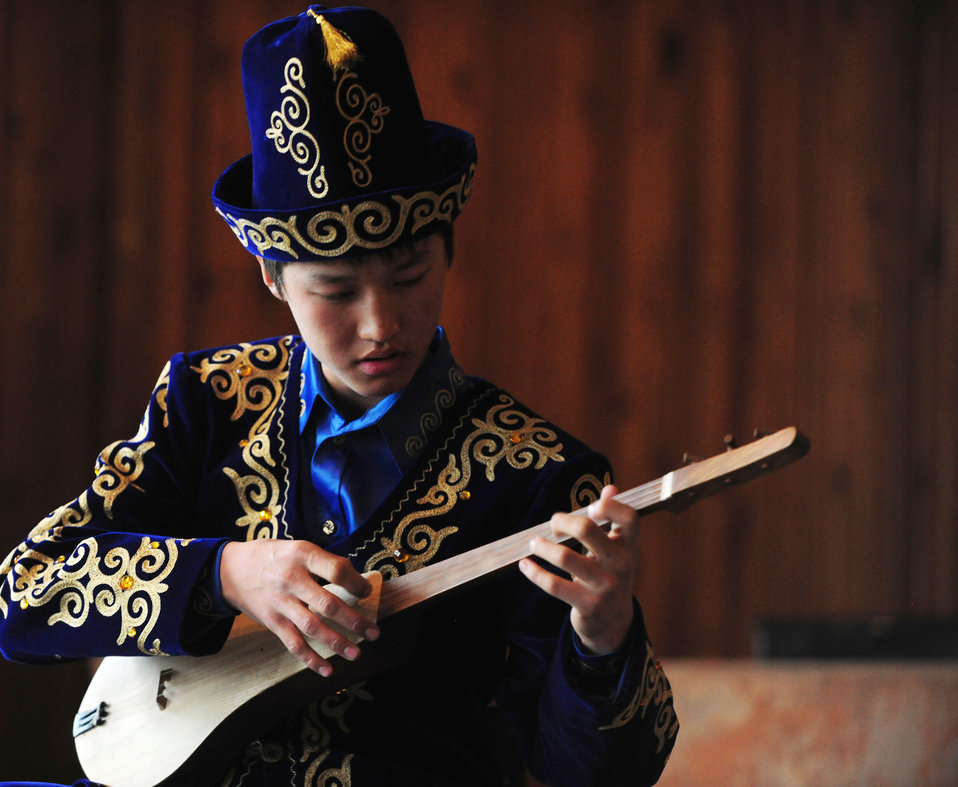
Cheers to Bishkek

Kyrgyz students play the Komuz, a local traditional instrument, for the Washington Redskins Cheerleaders Jan. 27, 2010, at the Abdraev Musical Boarding School in Bishkek, Kyrgyzstan. The Transit Center at Manas in Kyrgyzstan is their first stop in a two-week long tour where they will perform for Airmen, Soldiers, Sailors and Marines deployed overseas.